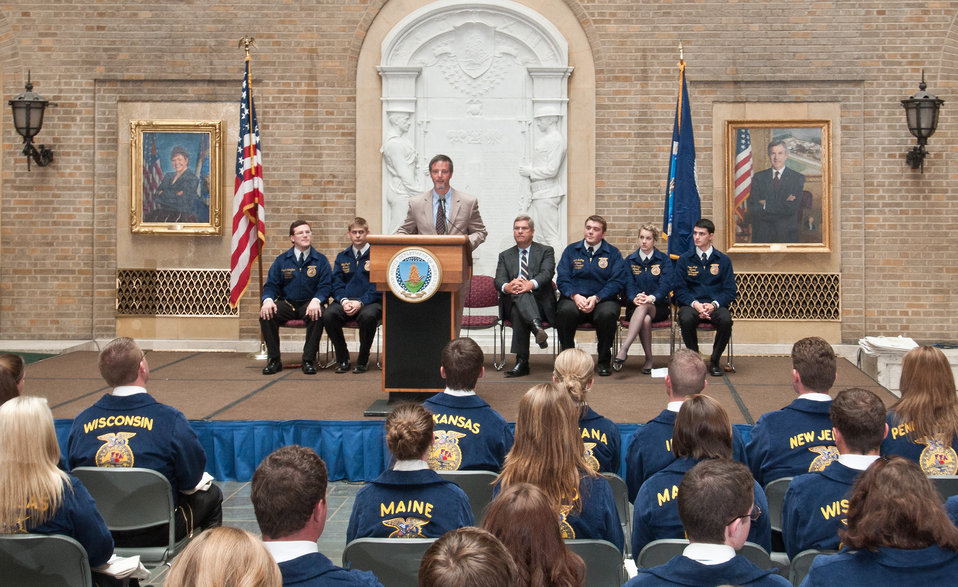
Senior Policy Adviser for Rural Affairs at the White House Domestic Policy Council Doug McKalip speaks with the National Future Farmers of America (FFA) leadership at the U.S. Department of Agriculture in Washington, DC, on Thursday, July 28, 2011.